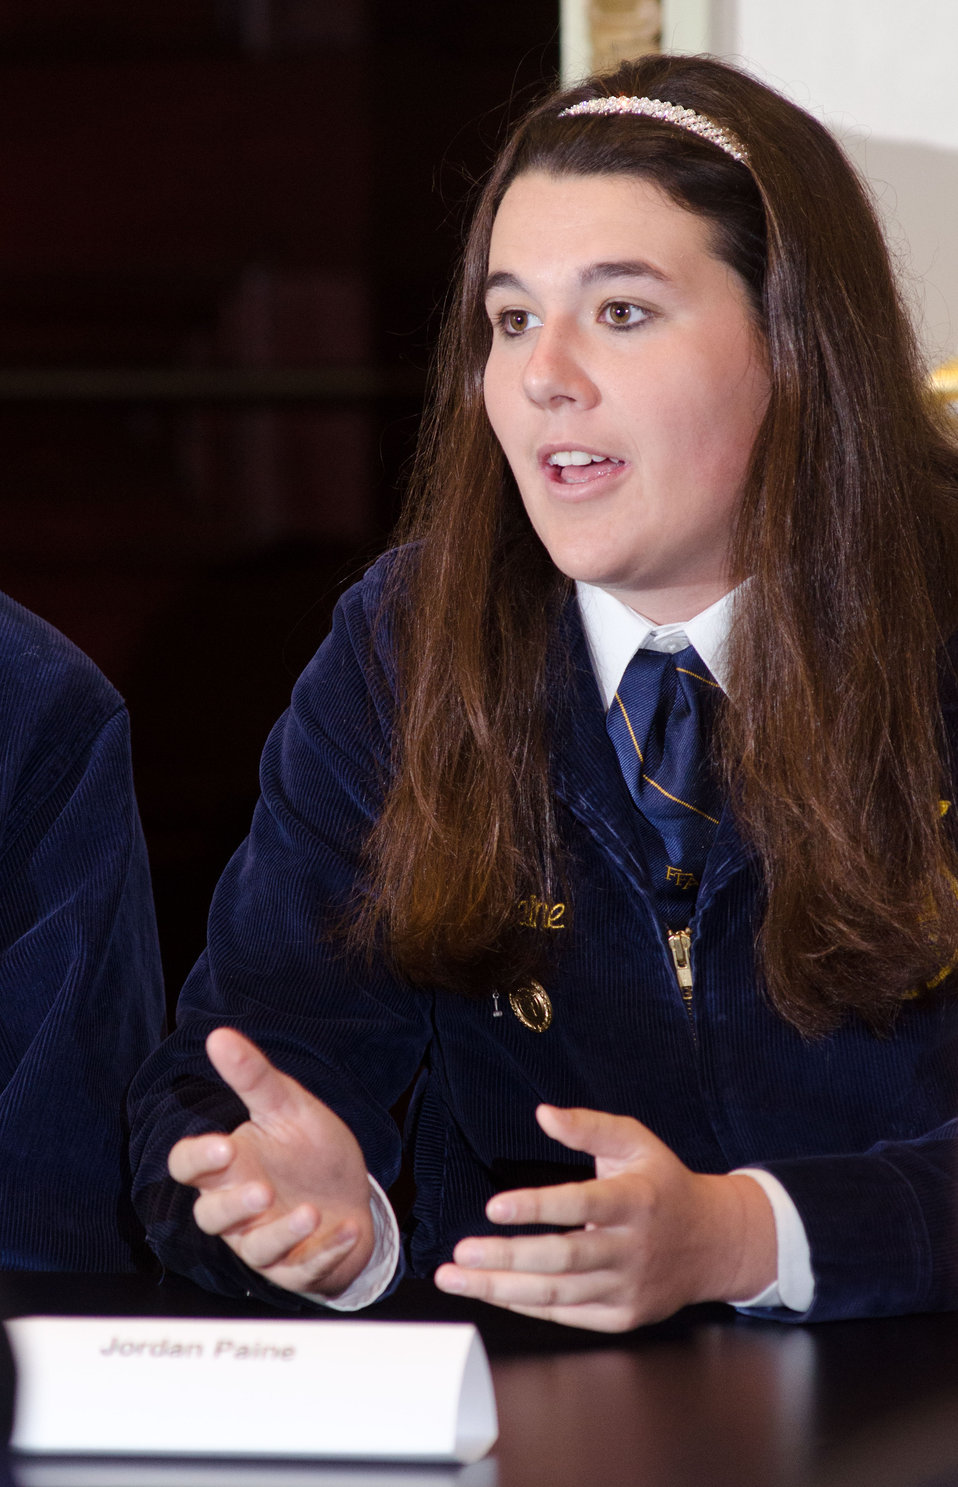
FFA member and Youth Champions of Change panelist Jordan Paine speaks during the Champions of Change Recognition event in the Indian Treaty Room of the Executive Office Building in Washington, D.C. on Tuesday, Oct. 9, 2012. The Champions of Change program was created to honor ordinary Americans doing great work in their communities. Each week, a different sector is highlighted and groups of Champions, ranging from educators, entrepreneurs and community leaders, are recognized for the work they are doing to serve and strengthen their communities.